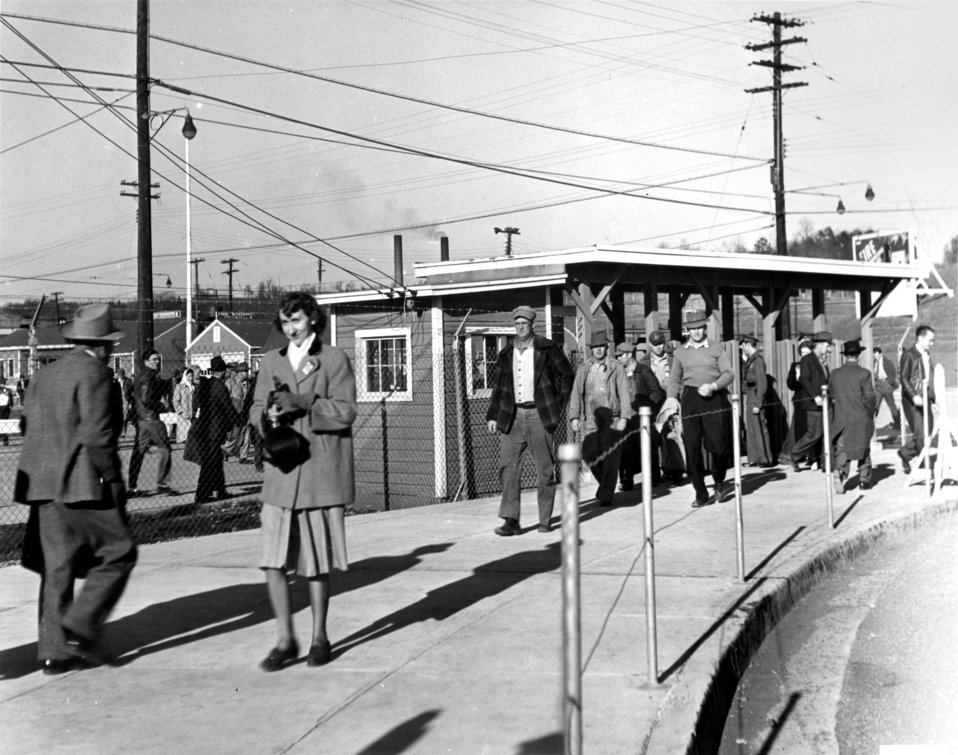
Shift Change K-25 Plant Oak Ridge

5446-1 DOE photo Ed Westcott 2-17-1949 Oak Ridge Tennessee